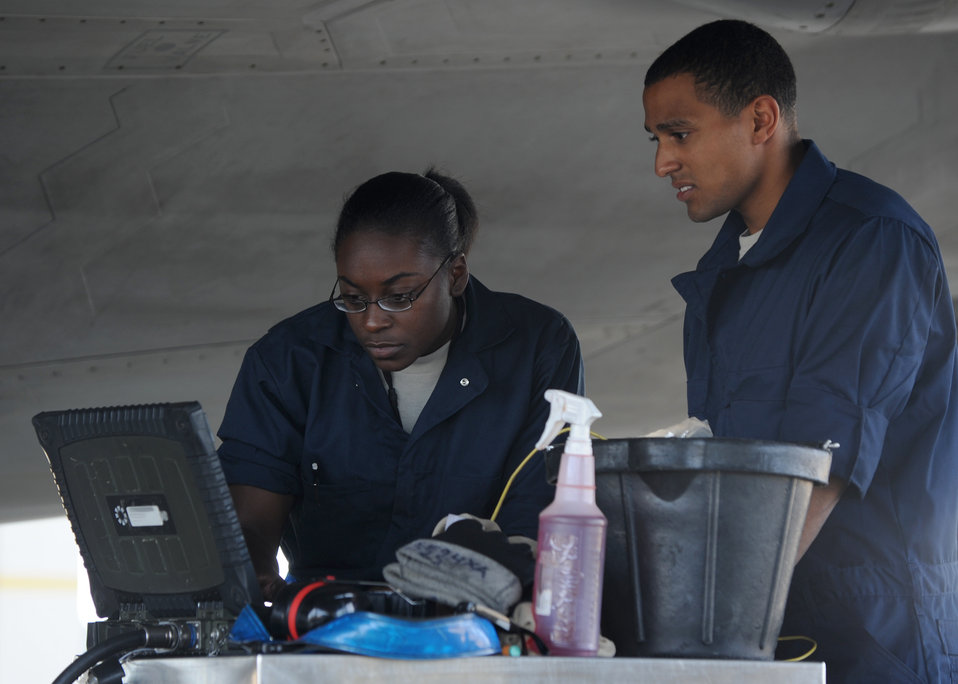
Checking the numbers

Senior Airmen Kimara Duncan, left, and Jonathan Millan refer to their computer during routine maintenance on an F-22 Raptor at Langley Air Force Base, Va., Sept. 25, 2012. Crew chiefs perform preventative maintenance, pre- and post-flight inspections, and maintain and repair the aircraft inside and out. Duncan and Millan are 94th Aircraft Maintenance Unit tactile aircraft maintainers.